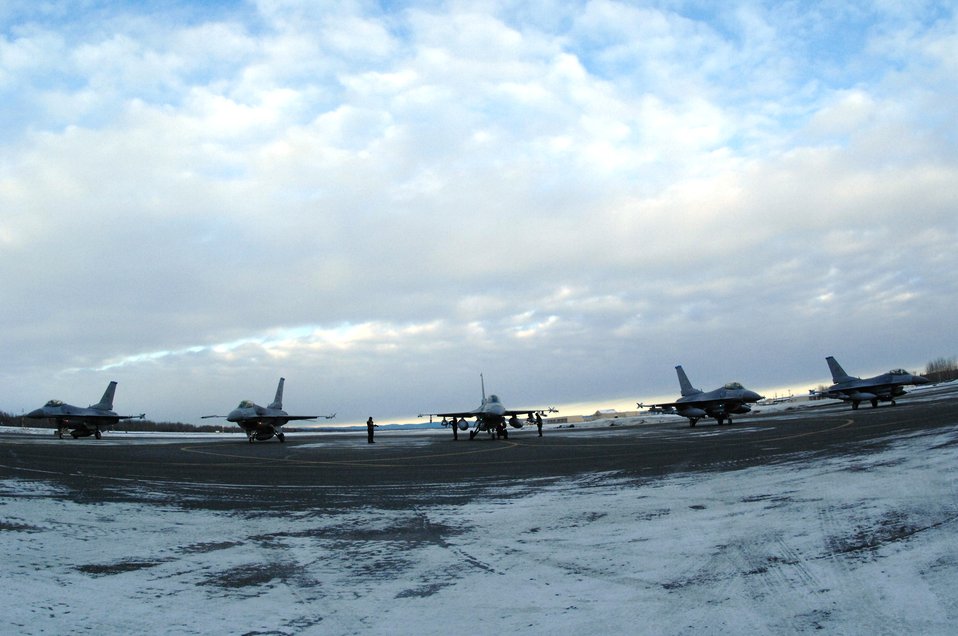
A chilling task

Airmen arm and inspect five F-16 Fighting Falcons Feb. 8 at Eielson Air Force Base, Alaska. The crew is responsible for arming all weapons and making sure aircraft are ready for flight. The 18th Fighter Squadron here conducts air operations for combat-ready F-16 aircraft and provides close-air support, forward air control, battlefield air interdiction, and offensive counter air. The crew is assigned to the 354th Maintenance Squadron.